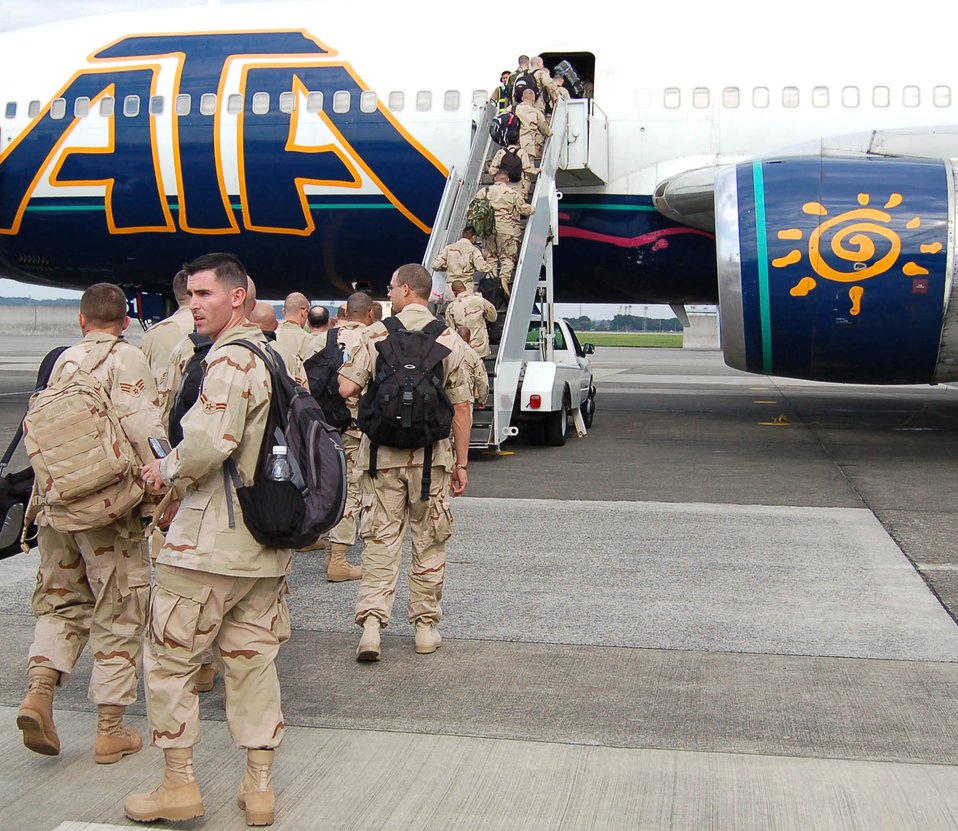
Yokota Airmen deploy throughout Southwest Asia

Airmen from the 374th Airlift Wing board their flight to depart Yokota Air Base, Japan. They are deploying for 120 days to support Operations Enduring Freedom and Iraqi Freedom. More than 300 Airmen from the base will support operations for Air Expeditionary Force 3 and 4.